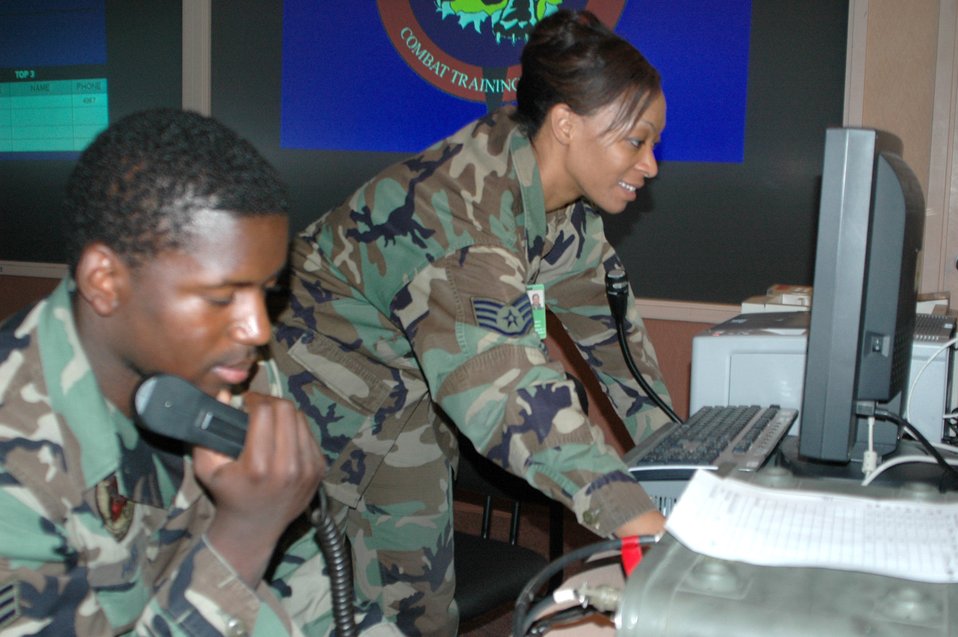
Luke team trains for combat at Red Flag-Alaska

Senior Airman Earnest Hooks and Staff Sgt. Hieya Franklin pass along vital aircraft status information from the operations desk during Red Flag-Alaska 07-1 April 11 at Eielson Air Force Base, Alaska. Red Flag-Alaska is a Pacific Air Forces-directed field training exercise flown under simulated air combat conditions. It is conducted on the Pacific Alaskan Range Complex with air operations flown out of Eielson and Elmendorf Air Force bases. Airman Hooks and Sergeant Franklin are 61st Fighter Squadron aviation resource managers.